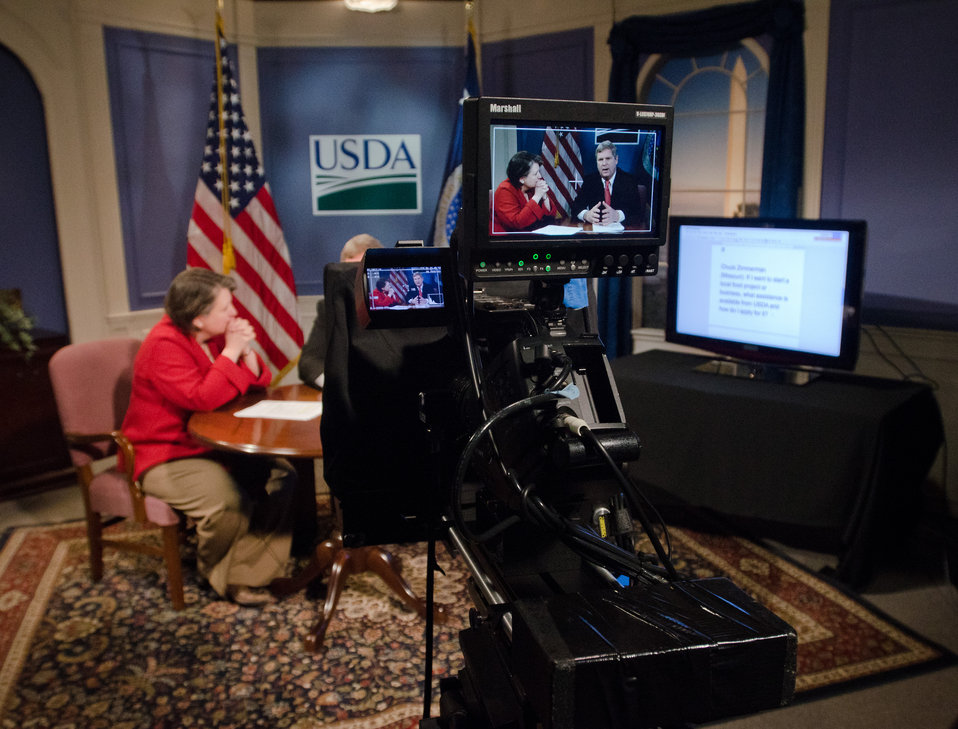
Seen though video camera monitors, Agriculture Secretary Tom Vilsack and Agriculture Deputy Secretary Kathleen Merrigan received a question via twitter message while in the USDA TV studio, during the unveiling of the Know Your Farmer, Know Your Food (KYF) Compass, an interactive web-based document and map highlighting USDA support for local and regional food projects and successful producer, business and community case studies. webinar to highlight USDA's work over the past three years, the Secretaries emphasized how local and regional food systems across the country create additional economic opportunities for farmers, ranchers and food entrepreneurs, expand healthy food access and meet growing customer demand. At the U.S. Department of Agriculture in Washington, D.C., on Wednesday, February 29, 2012.